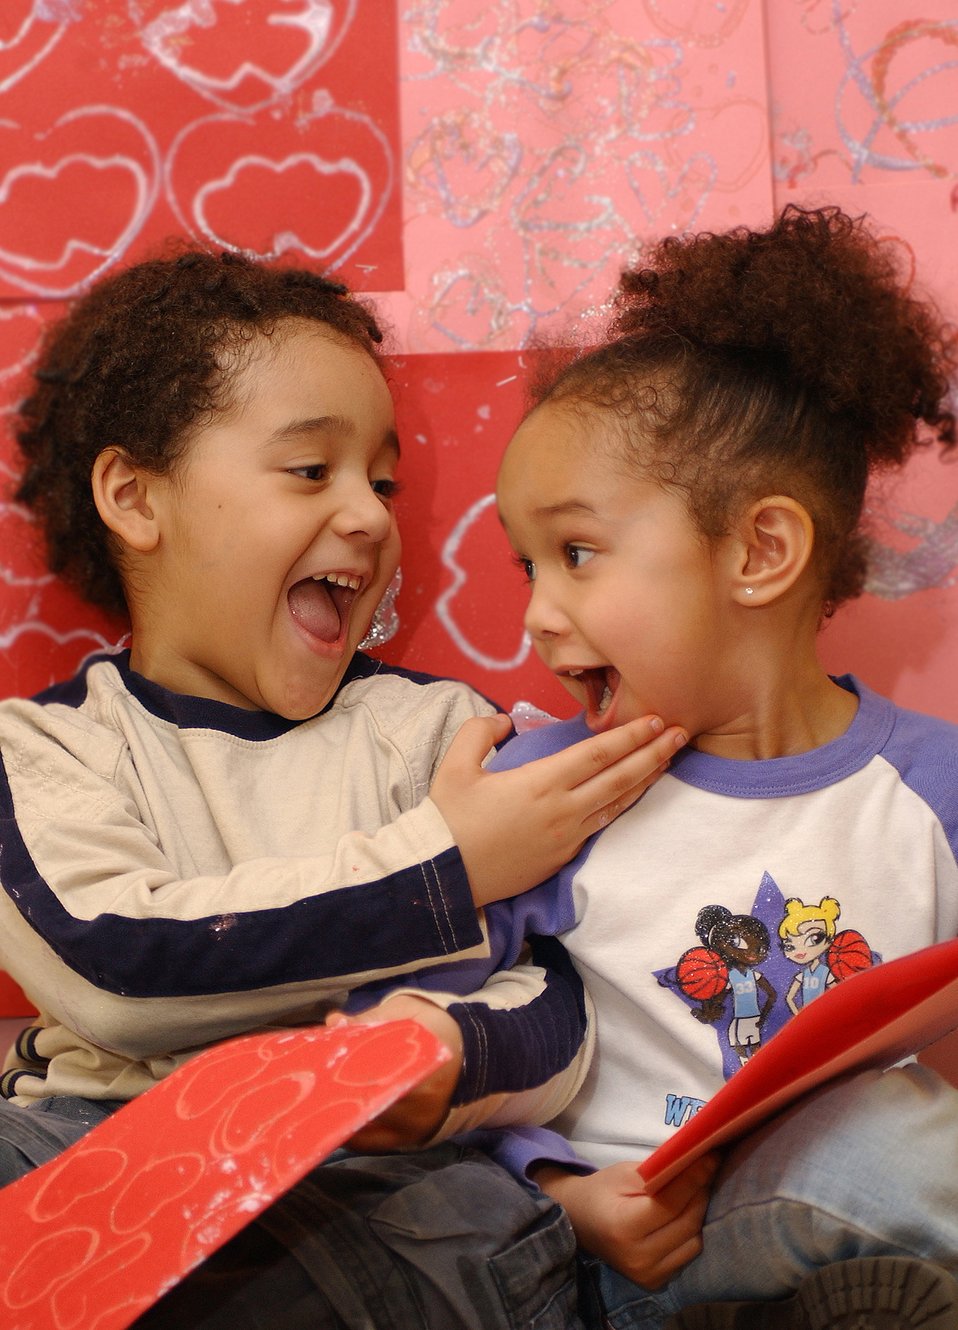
Will you be my Valentine?

ROYAL AIR FORCE MILDENHALL, England -- Sava Kramer (left) and Alyssa Ross exchange valentines at the child development center here. Sava is the son of Staff Sgt. Taj and Aisha Kramer of the 488th Intelligence Squadron, and Alyssa is the daughter of Tech. Sgt. Derrick and Christin Ross of the 100th Security Forces Squadron.